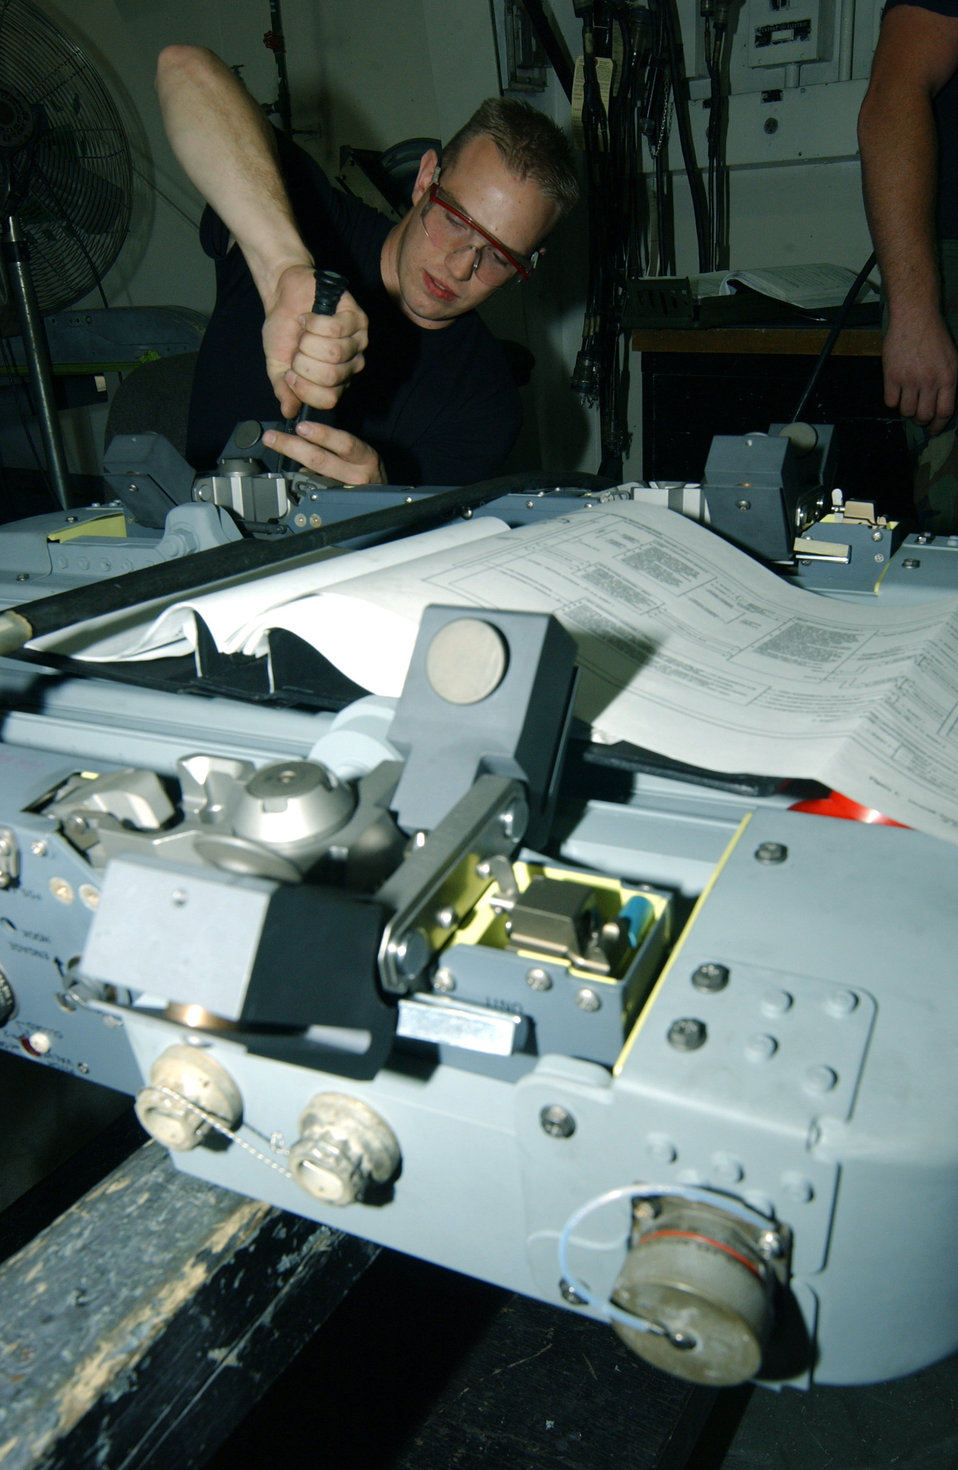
Function checks

SHAW AIR FORCE BASE, S.C. -- Airman 1st Class Narley Wright performs a safety wiring functional check on a bomb release unit here Sept. 22. Airman Wright is assigned to the 20th Equipment Maintenance Squadron.